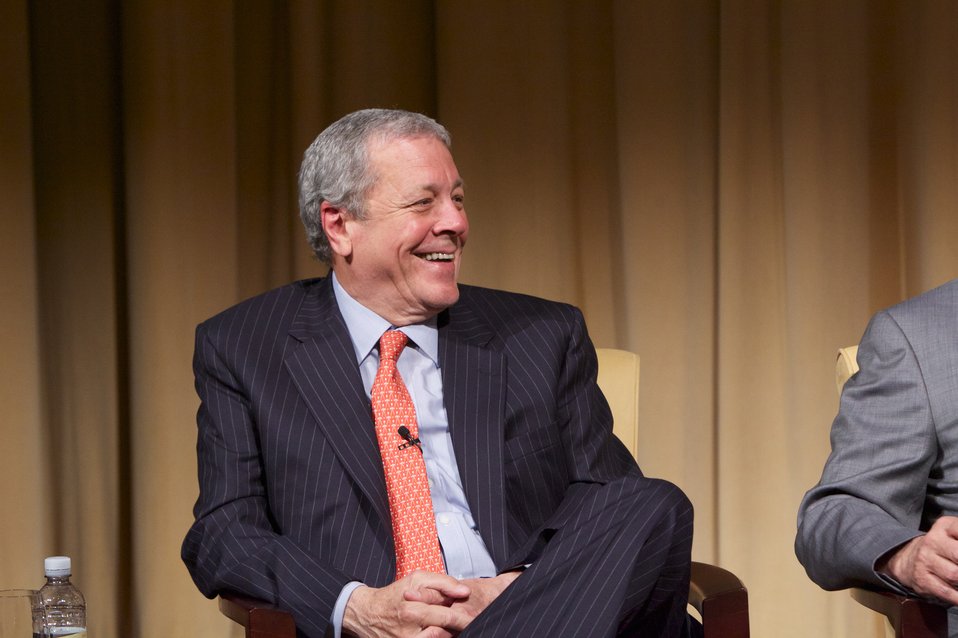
The Role of Congress in International Crises